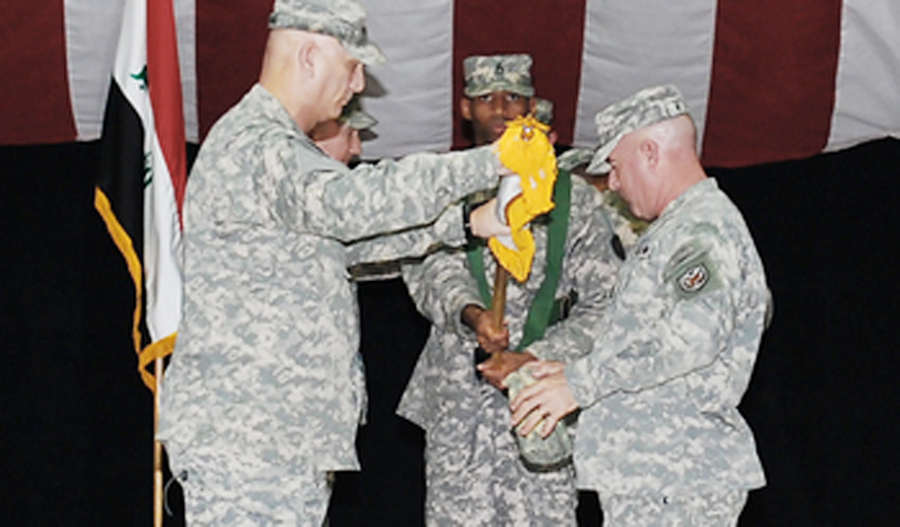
New command marks milestone in Iraq

Army Gen. Raymond T. Odierno, U.S. Forces-Iraq commanding general, and Command Sgt. Maj. Lawrence K. Wilson, USF-I command sergeant major, uncase the USF-I colors Jan. 1, 2010, during the activation ceremony at Al Faw Palace, Camp Victory, Iraq.